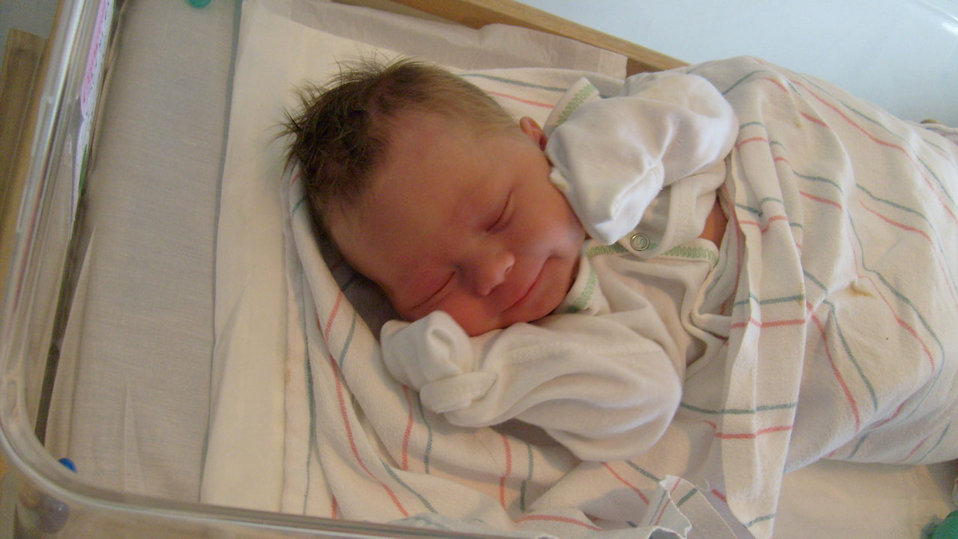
New born baby.